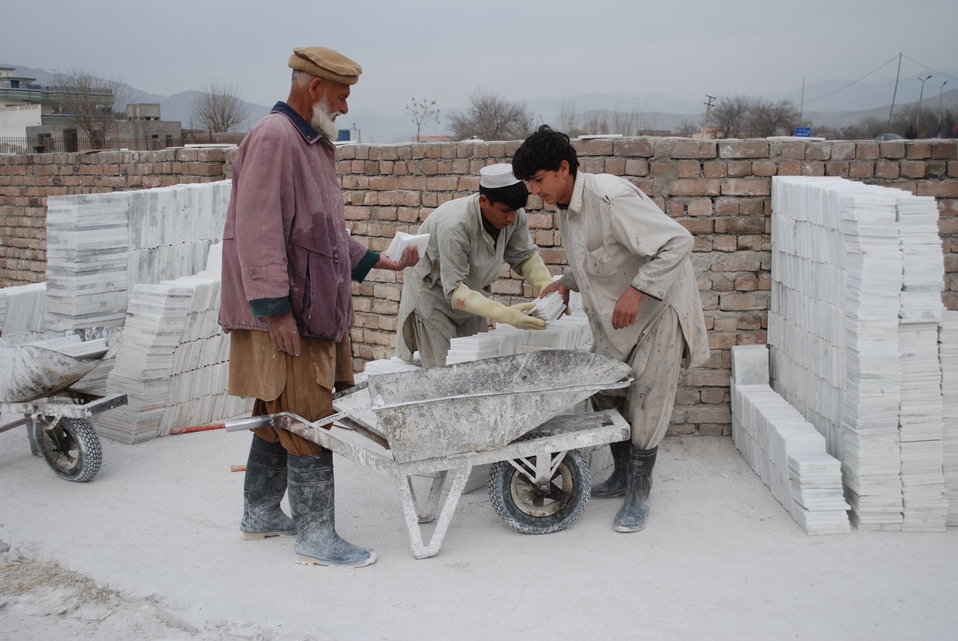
'On the Road' in Nangarhar Province